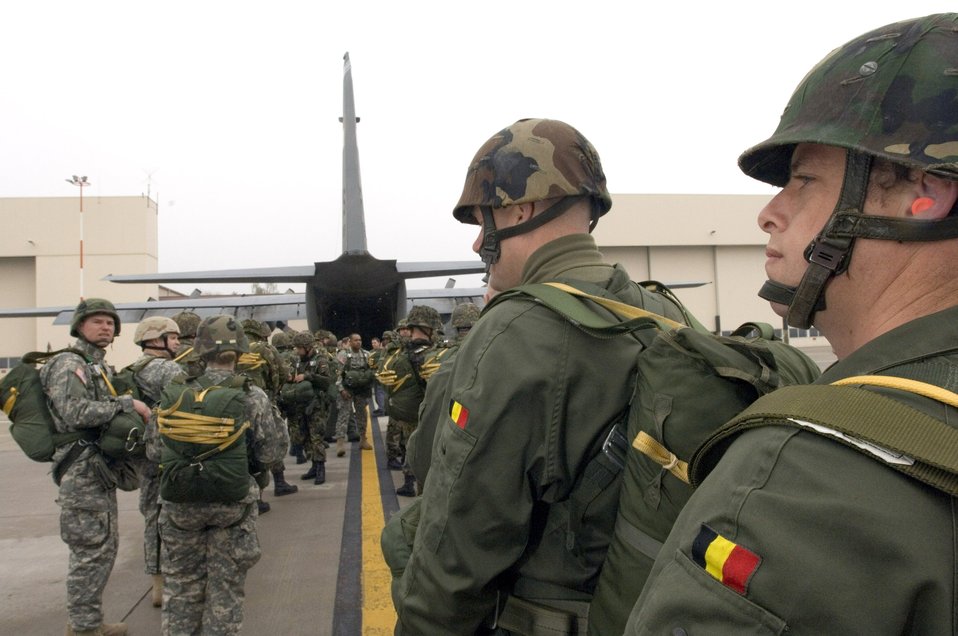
Multinational training

Paratroopers from the United States, Belgium, France, Germany, Italy and the Netherlands board a C-130 Hercules at Ramstein Air Base, Germany, on Thursday, April 27, 2006. Three days of jumps were scheduled using air transports from the 37th Airlift Squadron.